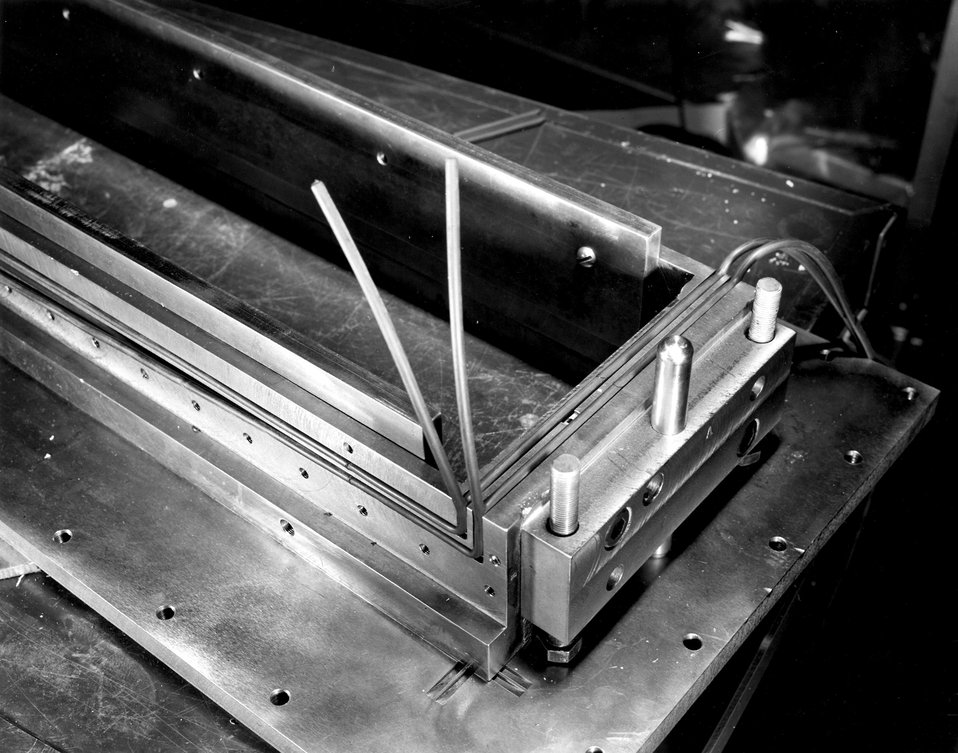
End box of main vacuum chamber showing details of three
dimensional double Vassal gaskets.